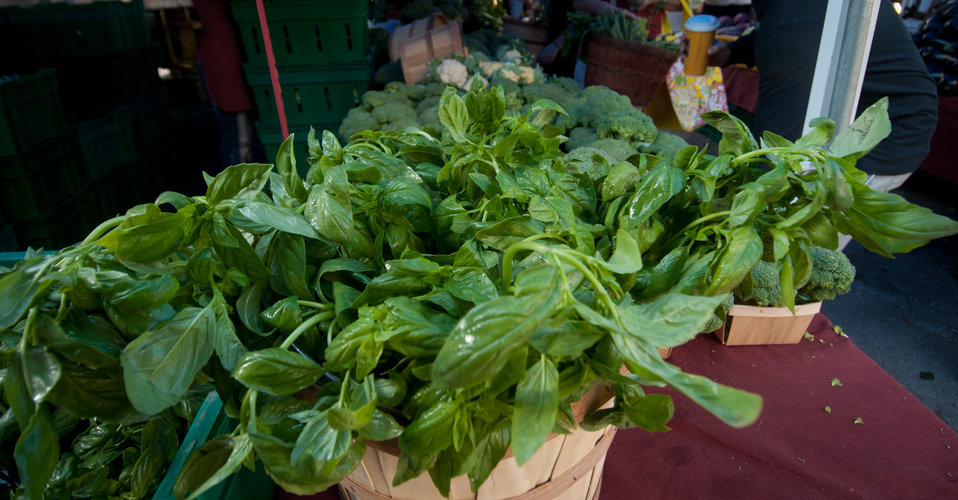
Worden Farm (www.wordenfarm.com) fresh organic basil plants are ready for sale at the Saturday Morning Market, in St. Petersburg, FL, on April 14, 2012. Worden Farm is a family farm that provides certified organic produce to Southwest Florida through community supported agriculture (CSA) membership programs and retail sale at several farmer’s (community) markets. Chris Worden, Ph.D. and Eva Worden, Ph.D. founded and operates the farm that employs more than 20 people. Growing certified organic crops in the coastal sandy soil has required them to develop innovative farming techniques which help the farm as well as assist the studies of universities and farm industry. There are several Worden Farm apprenticeships that provide hands-on training in all aspects of the farm, to include direct marketing at the Saturday Morning Market, or other market sites. The farm also holds culinary and gardening workshops, and other interactive educational events. One of their organic certifications is from the U.S. Department of Agriculture (USDA) and they have partnered with the USDA Natural Resources Conservation Service (NRCS) for soil conserving windbreaks and long tunnel structures to nurture seedlings and extend the growing season.